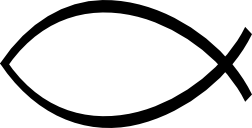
Ichthus